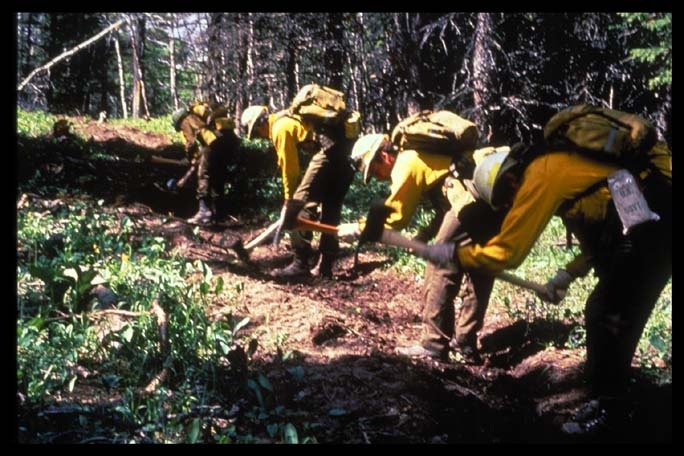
Line construction